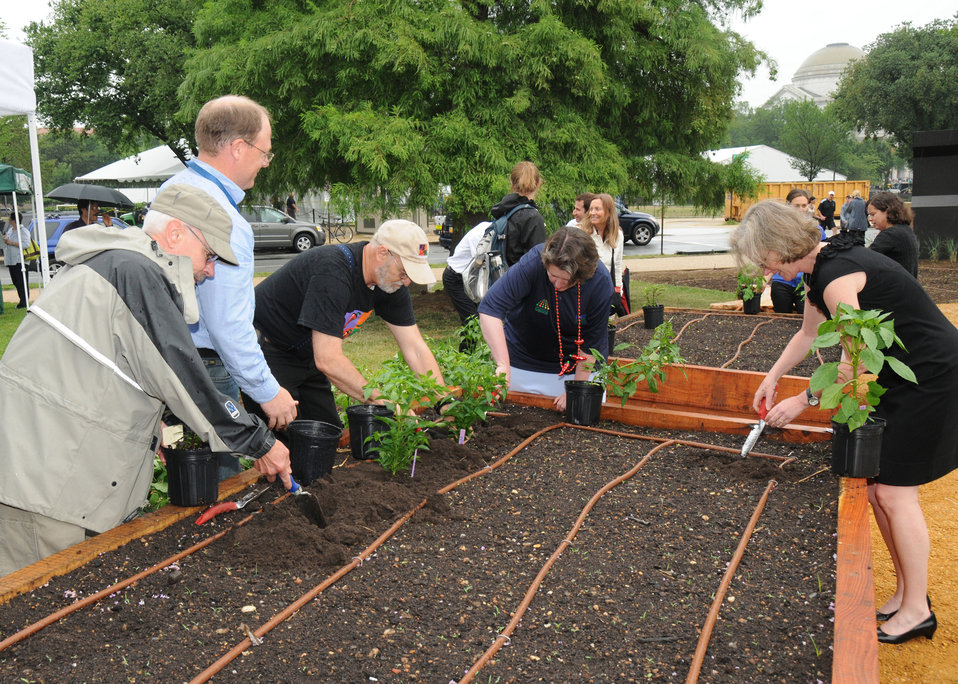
The U. S. Department of Agriculture (USDA) hosted a New Mexico Chile Pepper Fiesta on Wednesday, June 9, 2010 on the east lawn of the Whitten Building People’s Garden at the US Department of Agriculture in Washington, DC. Seeds from 21 different varieties of chiles received from New Mexico State University were grown into seedlings at the Sustainable Agricultural Systems Lab, Agricultural Research Service (ARS) in Beltsville, MD. The seedlings are planted in the newly constructed container boxes at the People’s garden. (L to R ARS lab volunteer Douglas Johnson, ARS employee Jude Maul, New Mexico State University Extension Horticulture Specialist Dr. Curtis Smith, Agriculture Deputy Secretary Kathleen Merrigan, and Deputy Under Secretary for Marketing and Regulatory Programs Ann Wright) USDA photo 10di1397-88.